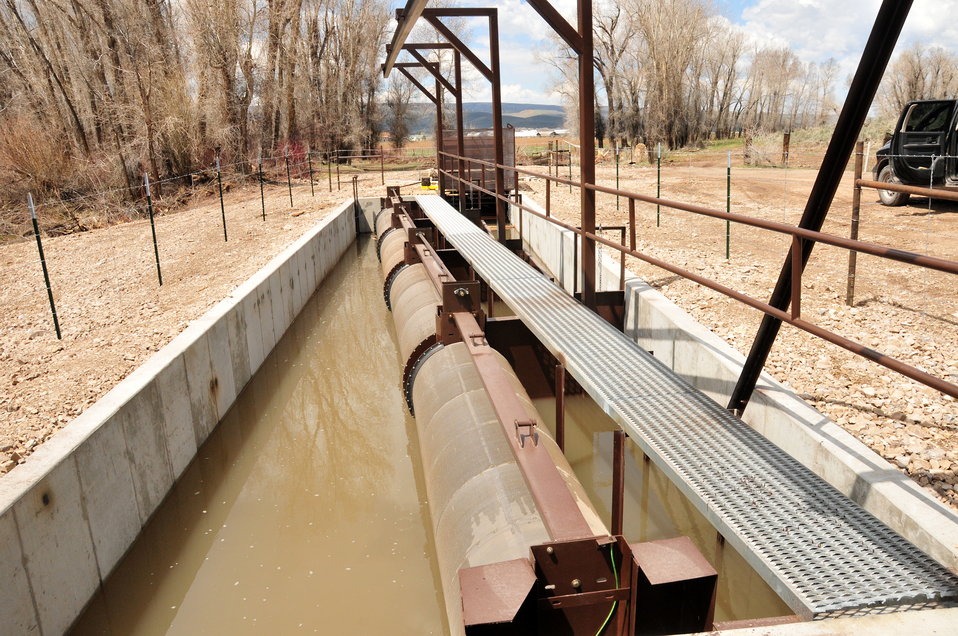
Rotating Drum Screen to Prevent Bonneville Cutthroat Trout Entrainment

A rotating drum screen installed on an irrigation headgate off of the Smithsfork River near Cokeville, Wyoming. The screen prevents Bonneville (Bear River) cutthroat trout and other fish species from entering the irrigation system and then becoming entrained. Numerous partners came together to plan, design, fund and install, including: USFWS Partners for Fish & Wildlife Program, USFWS Fish Passage Program, Trout Unlimited, Wyoming Game & Fish Department, Chevron, Wyoming Wildlife & Natural Resource Trust, and the